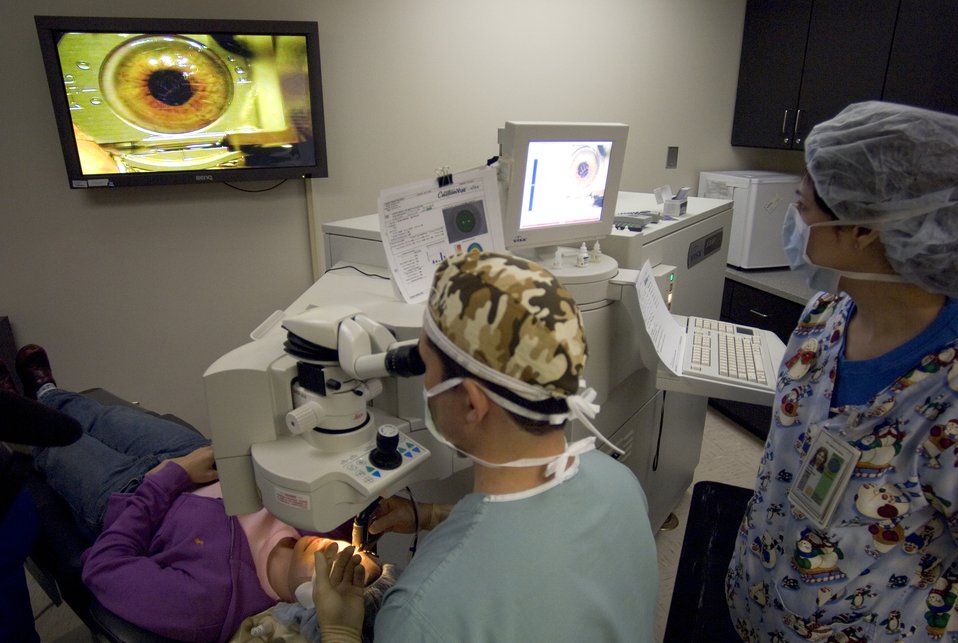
Better looking every day

Lt. Col. Charles Reilly performs Epi-LASIK surgery on Capt. Ruth Brenner Dec. 19 at the Wilford Hall Refractive Surgery Center at Lackland Air Force Base, Texas. The center has openings most every day for surgery and has some of the most advanced equipment in the world for performing refractive surgeries.